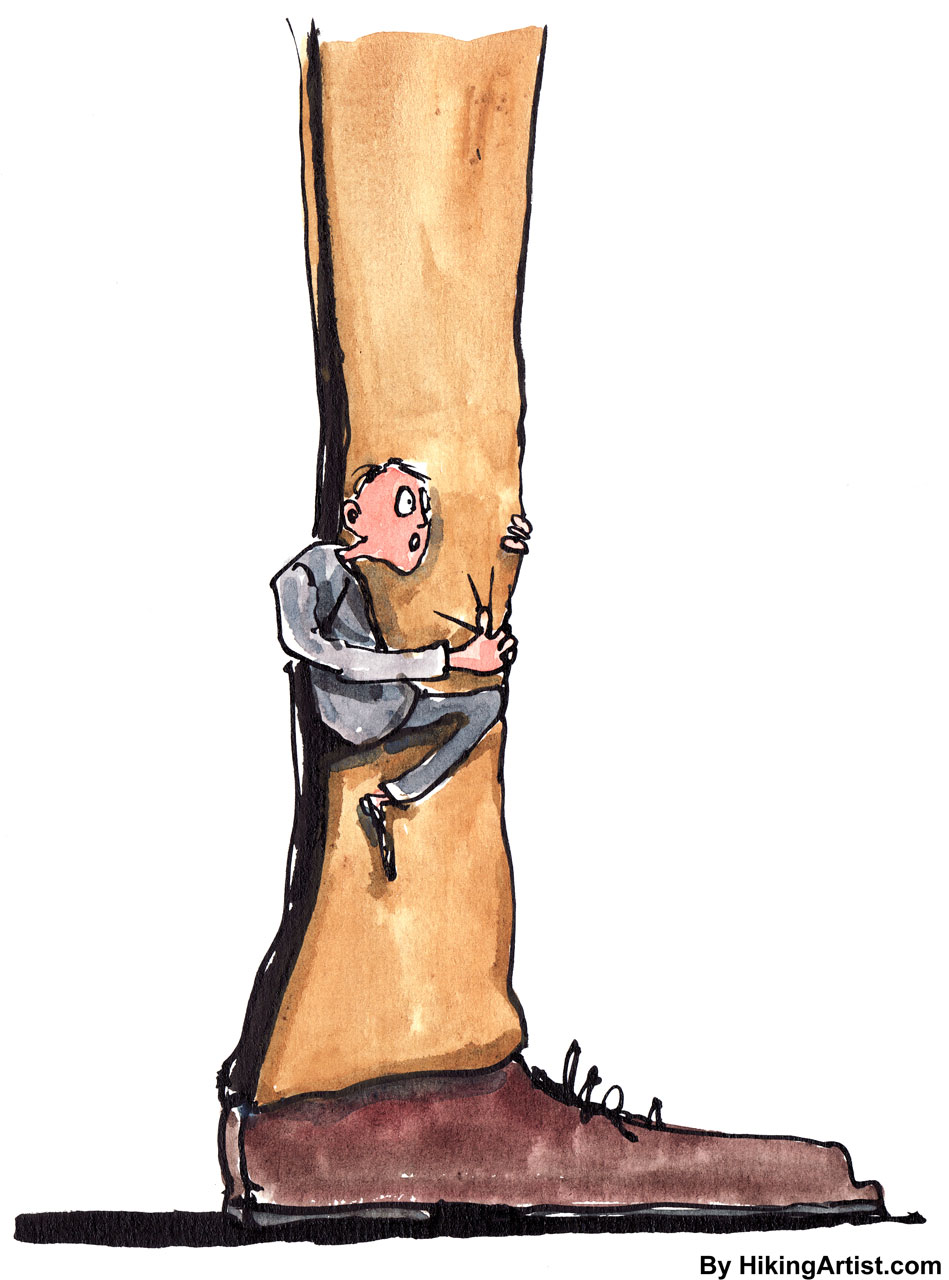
Scared guy

Little man hanging on to the leg of a big man.